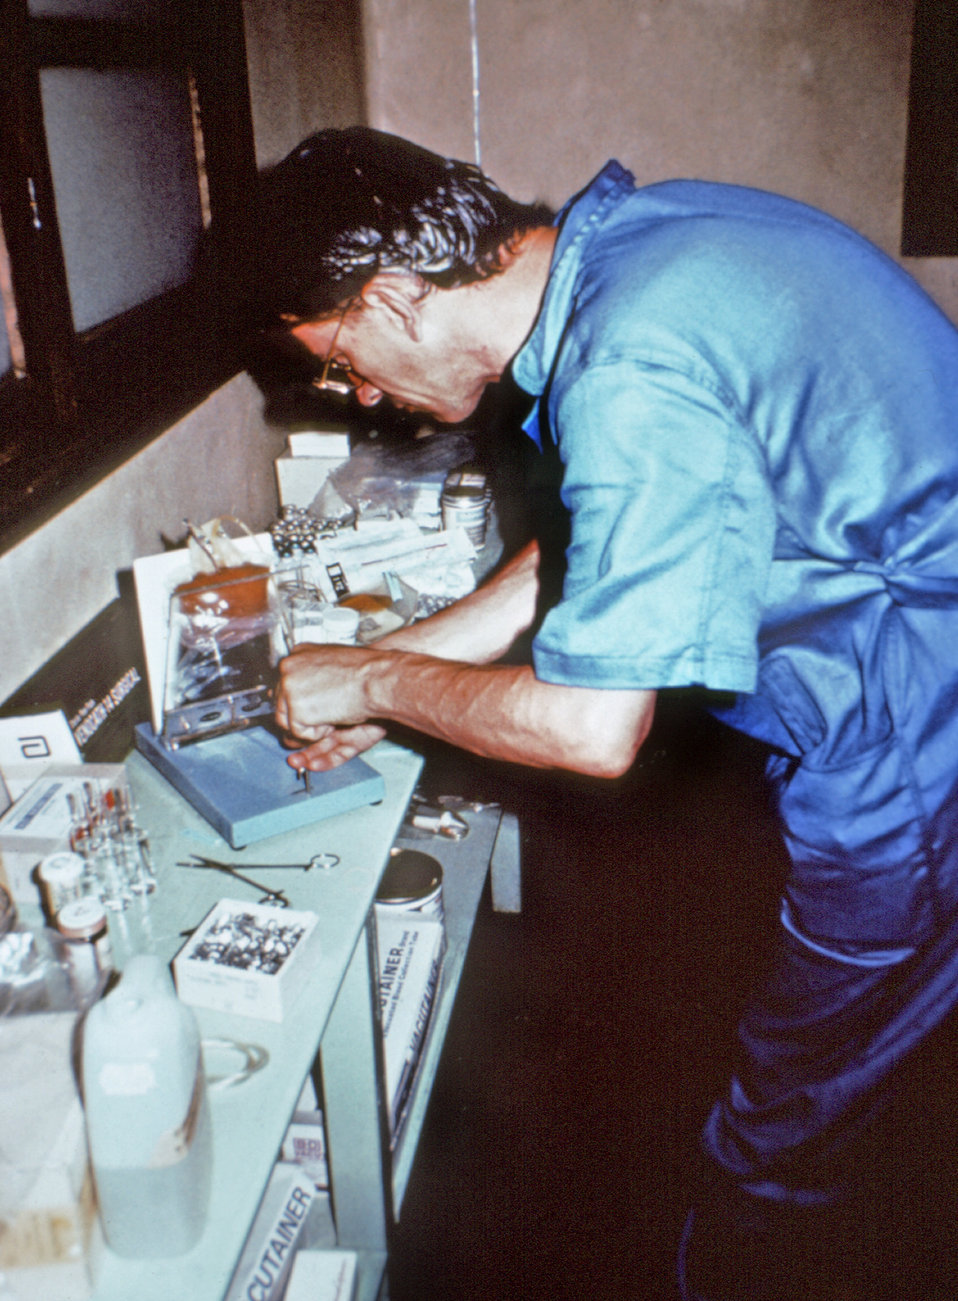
This photograph showed Dr. Dennis Courtois, a French hematologist, as he transferred plasma from donor blood during the 1976 outbreak in Yambuku, Zaire, now known as the Democratic Republic of Congo,